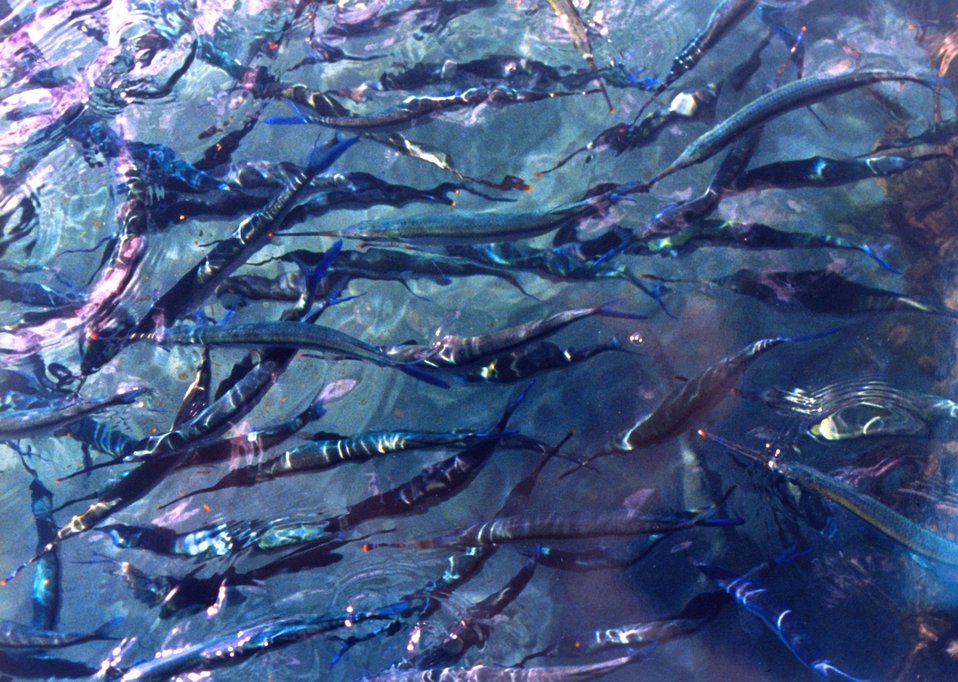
Needlefish at Ali Wai Yacht Harbor.